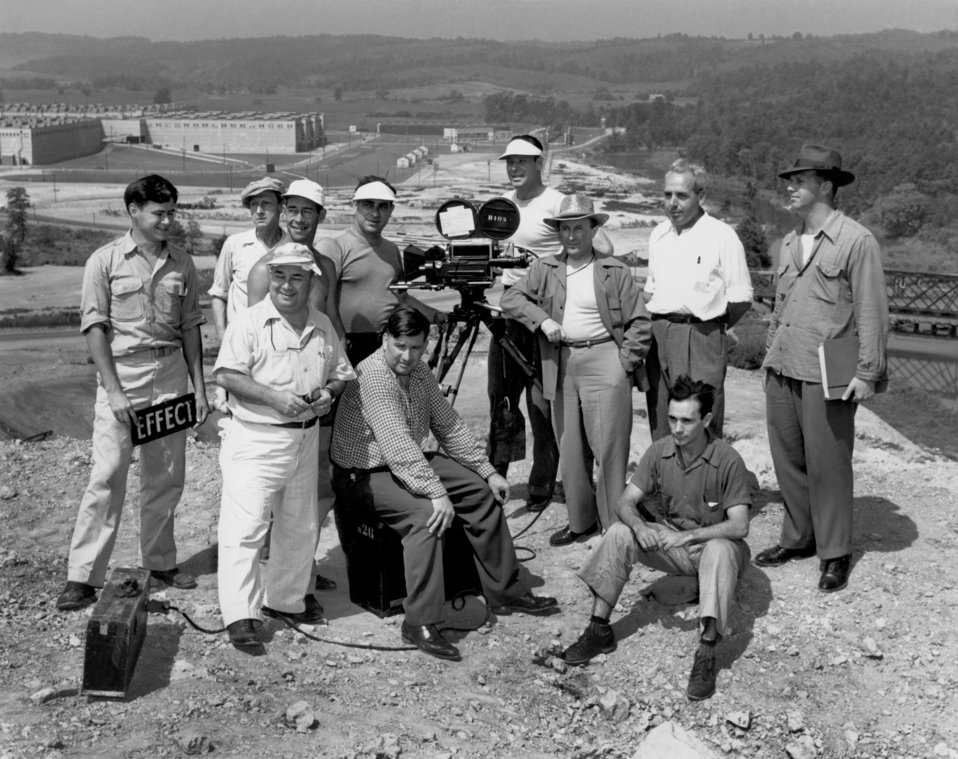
MGM Location Shots 1945 Oak Ridge

1863-4 DOE photo Ed Westcott 7-25-1946 K-25 Oak Ridge Tennessee